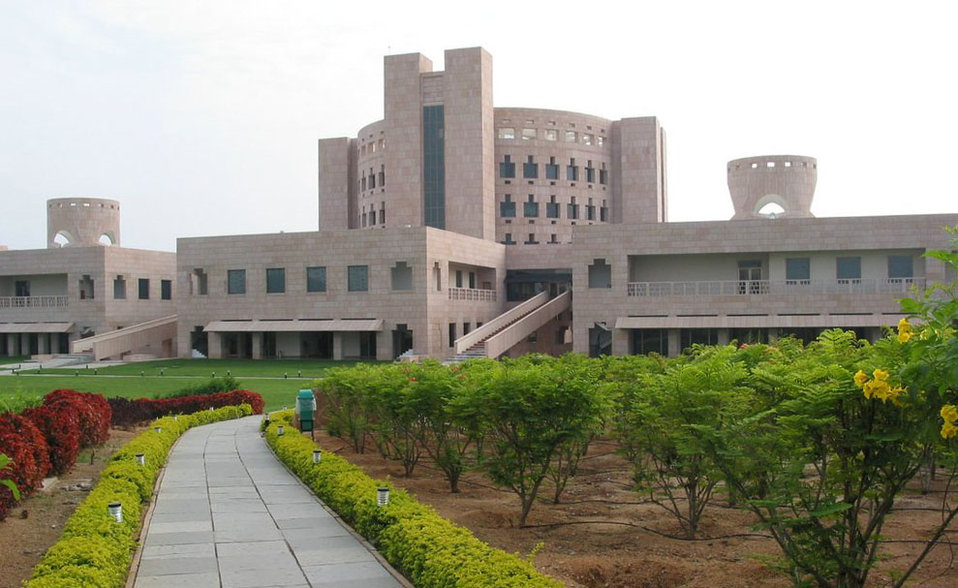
Indian School of Business